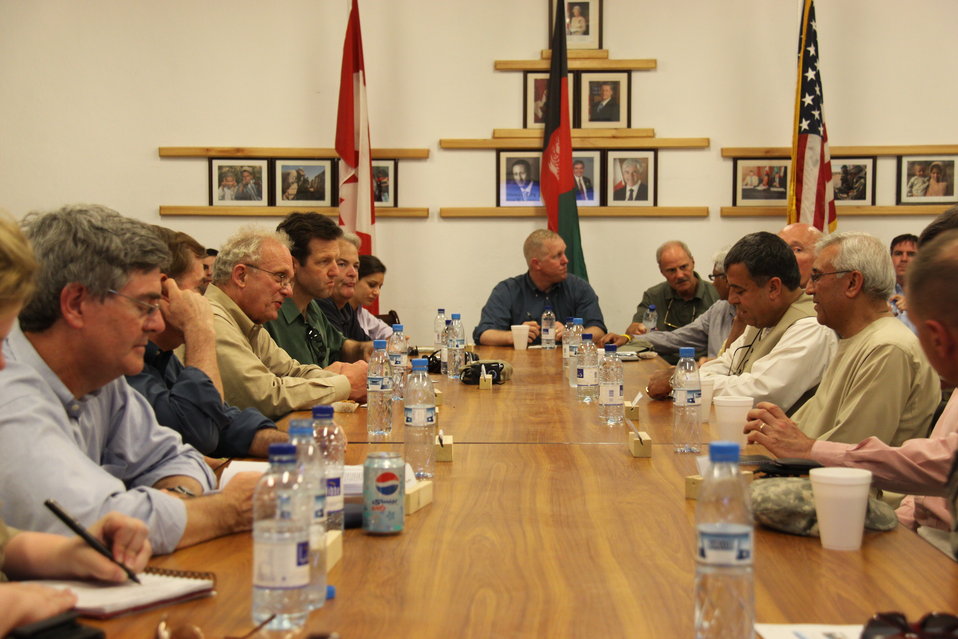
Meeting with Local Leaders in Kandahar